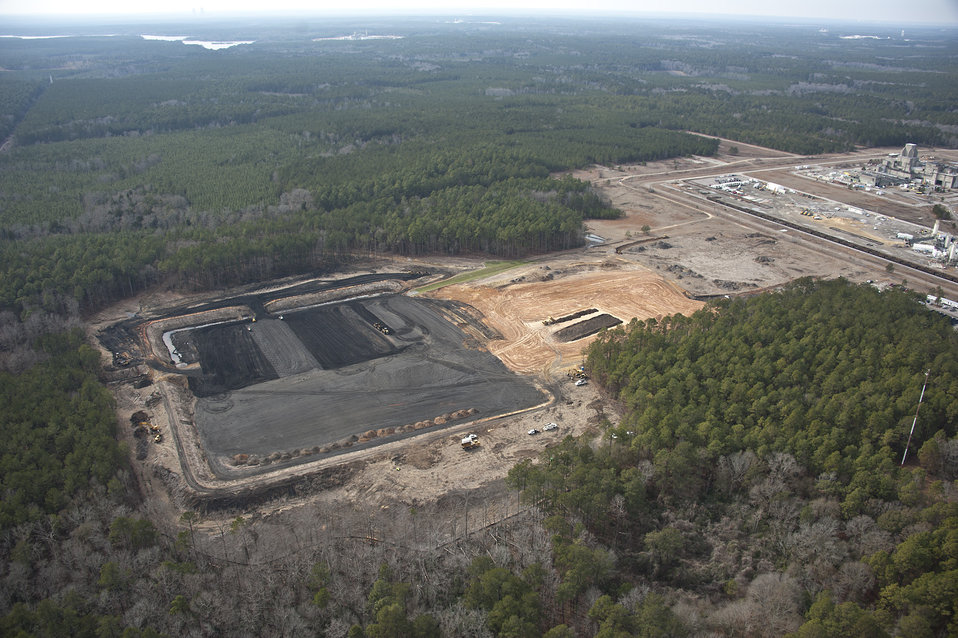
January 2011: P Ash Basin - During

At the P Area Ash Basin, Recovery Act workers removed about 35 acres of vegetation on and around the 14-acre manmade earthen basin to prepare for remediation. Next, they consolidated ash inside the basin that had spread in the area from former P Area Powerhouse operations, which ended in 1991. Workers then prepared a clean soil and sod cover, and planted seedlings.
The vegetative layer prevents precipitation from infiltrating the basin’s ash residues and entering the groundwater. About 1,500 feet of erosion-control fencing also was installed.